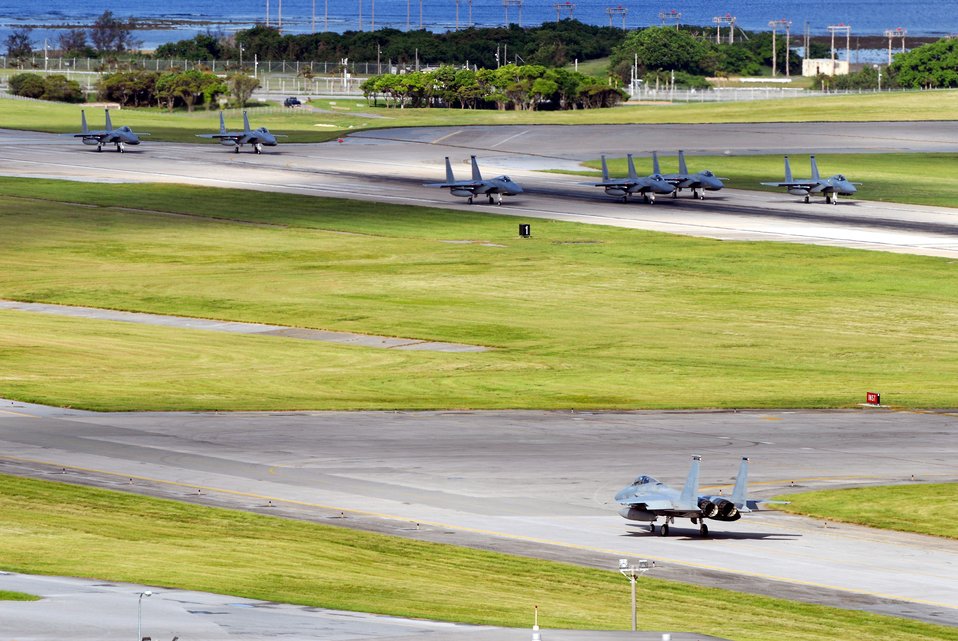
Valiant Shield exercise brings services together

F-15 Eagles from Kadena Air Base, Japan, taxi down the flightline at Kadena Air Base, Japan, Aug. 5 enroute to Guam. The fighters are taking part in the 22,000-plus participant, joint service exercise Valiant Shield which runs through Aug. 14.